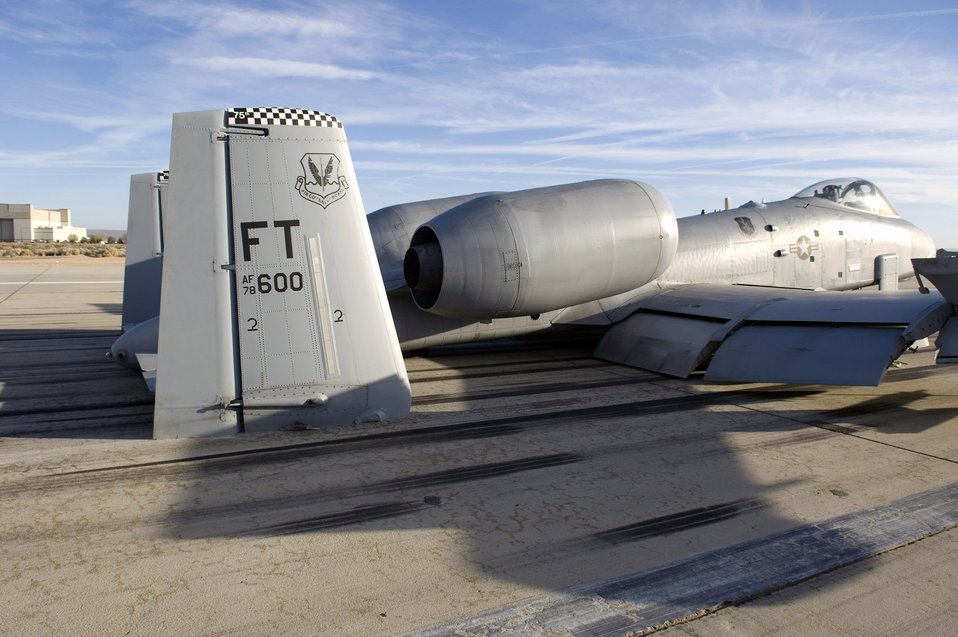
A-10 makes wheels-up landing at Edwards

The tail section of an A-10 Thunderbolt II makes direct contact with the runway after making an emergency landing March 25 at Edwards Air Force Base, Calif. The A-10 touched down with its landing gear in the up position after declaring an in-flight emergency. The pilot was not harmed. The aircraft, assigned to the 75th Fighter Squadron at Moody AFB, Ga., was participating in a Green Flag sortie out of Nellis AFB, Nev.